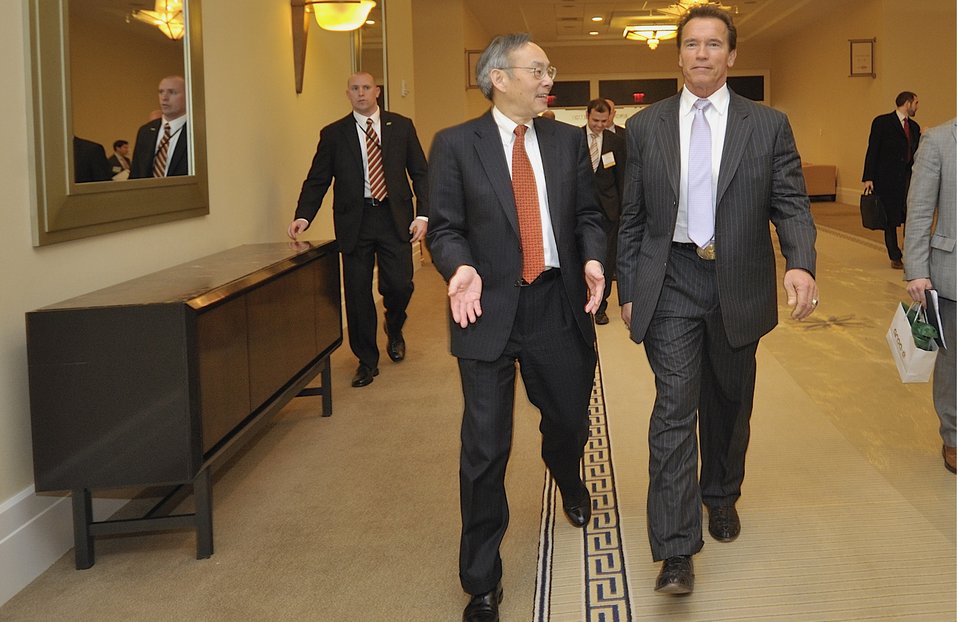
ARPA-E Energy Innovation Summit 2011, 2 of 83

Steven Chu, Secretary, United States Department of Energy and Arnold Schwarzenegger, Former Governor of California behind the scenes.